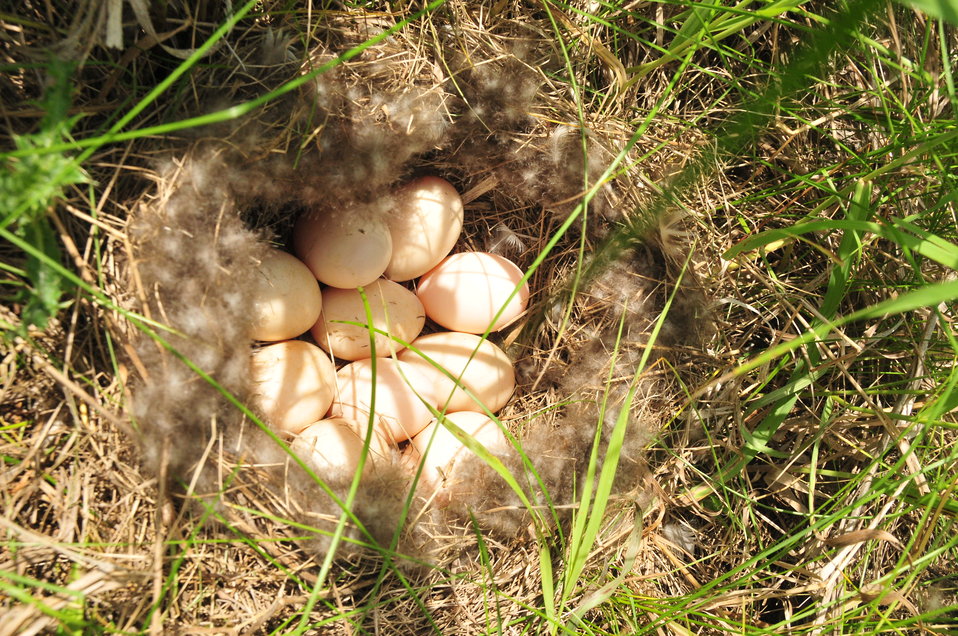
Blue Winged Teal Nest

A blue winged teal nest found in grassland in the Sand Lake Wetland Management District.